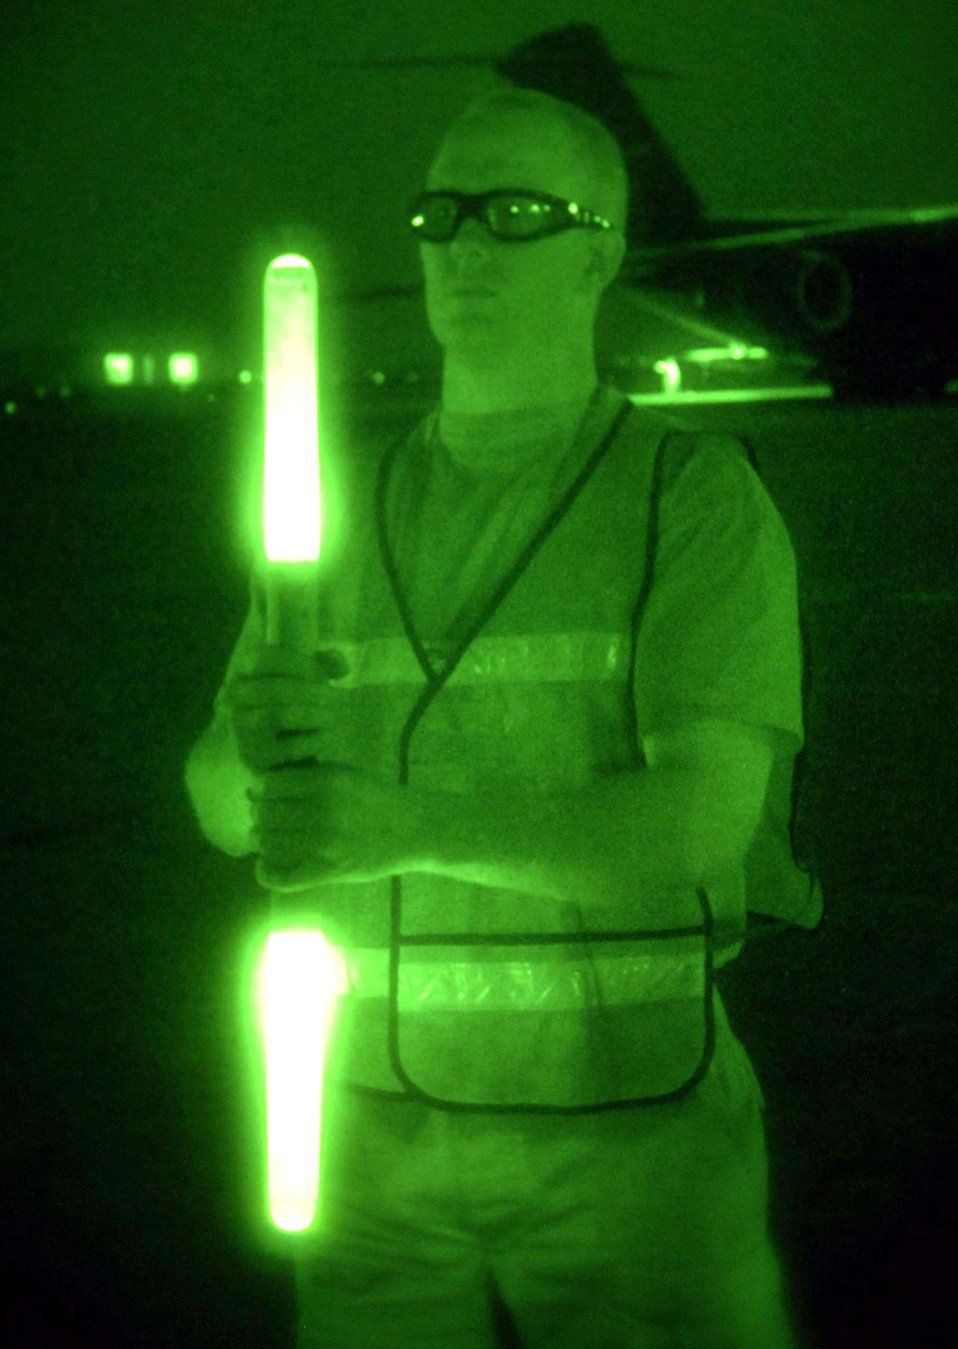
Airmen keep planes at Baghdad airport moving

Staff Sgt. Jacob Whetstone holds a pair of marshalling sticks to signal a pair of UH-60 Blackhawk helicopters where to park July 30 at Baghdad International Airport in Iraq. The 447th Expeditionary Operations Squadron transient alert team coordinates all traffic on the military airfield here. An average day brings in more than 100 fixed and rotary wing aircraft. Sergeant Whetstone is a 447th Expeditionary Operations Squadron crew chief.